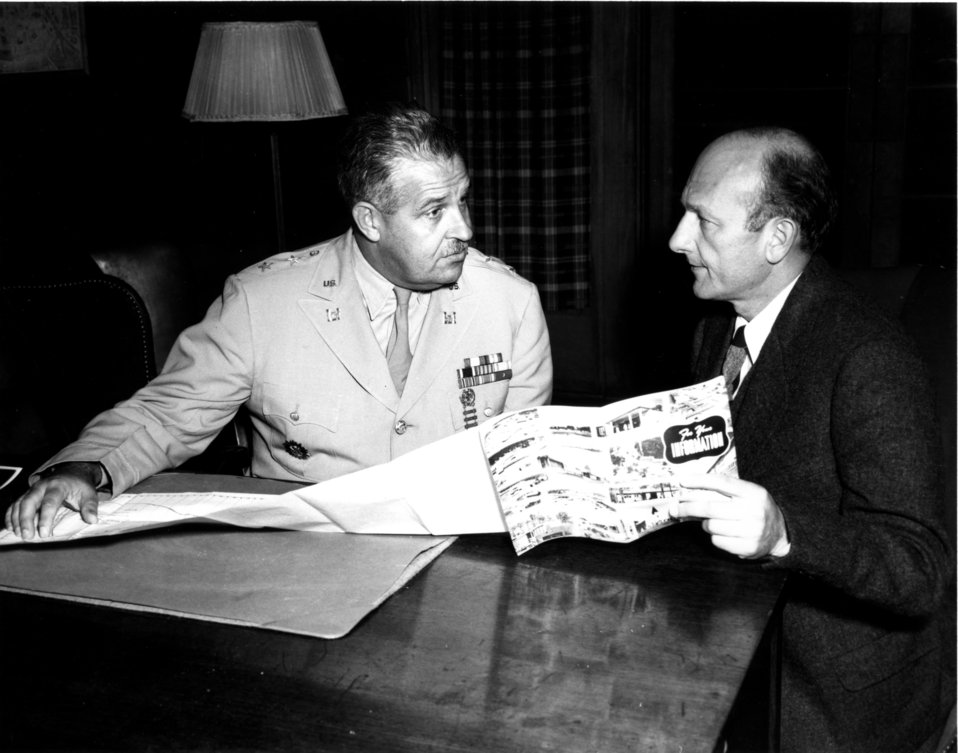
General Groves and David Lilienthal at Oak Ridge.